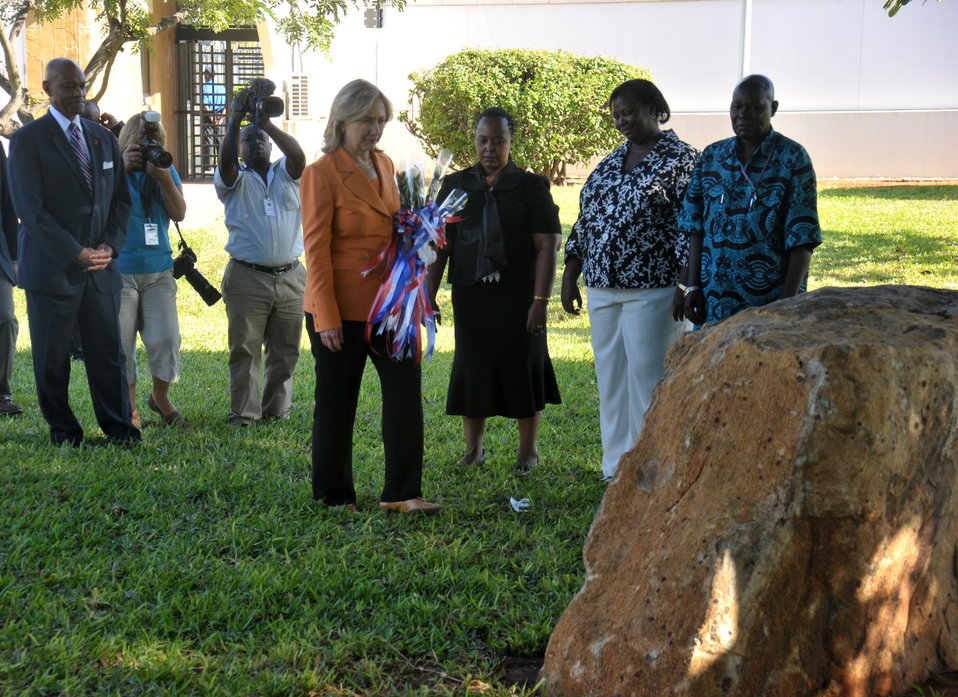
Secretary Clinton Lays Flowers at the Memorials of the 1998 Bombings

U.S. Secretary of State Hillary Rodham Clinton lays flowers at the memorial to the 1998 Bombing of the Embassy, at the U.S. Embassy in Dar es Salaam, Tanzania, on June 12, 2011.